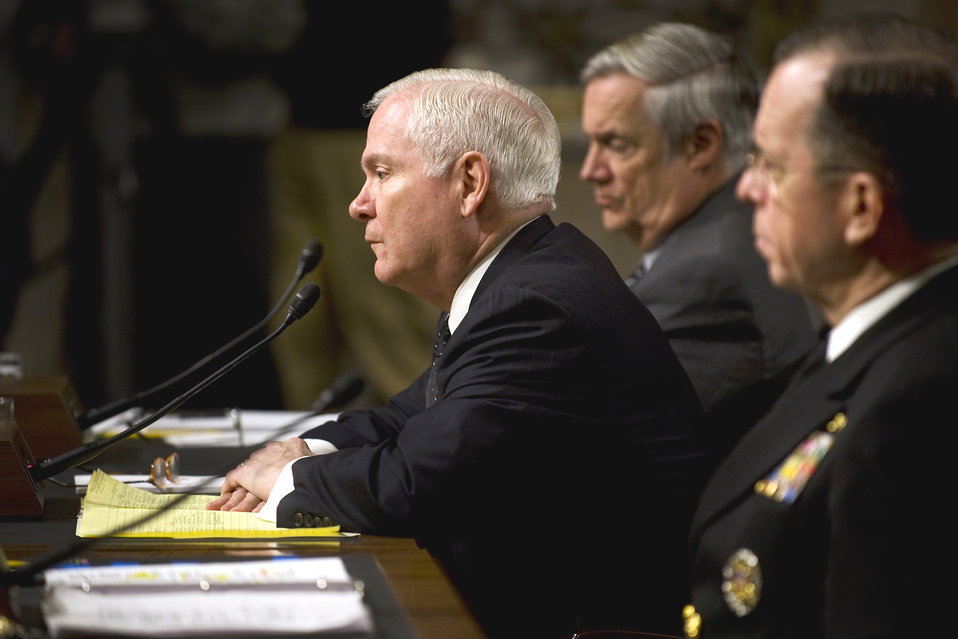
Fiscal 2011 request improves terror fight

Defense Secretary Robert M. Gates (center) responds to questions during testimony with Undersecretary of Defense Comptroller Robert Hale and Navy Adm. Mike Mullen, chairman of the Joint Chiefs of Staff, before the Senate Armed Services Committee Feb. 2, 2010, in Washington, D.C.